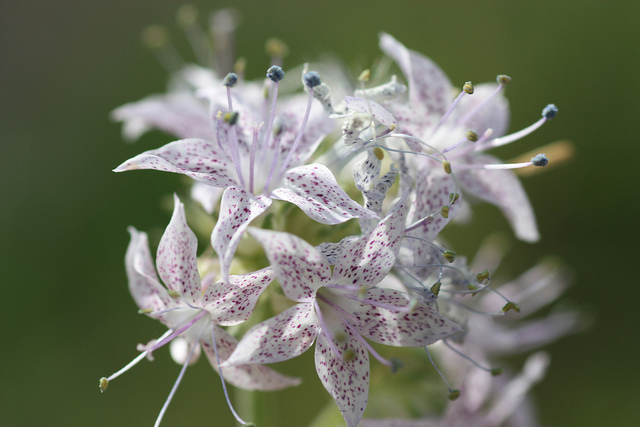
Pagosa skyrocket

The Pagosa skyrocket (Ipomopsis polyantha) is a rare biennial plant, which only grows on shale outcrops in and around Pagosa Springs in Archuleta County, Colorado. Approximately 78 percent of its suitable habitat is located on private lands, which are primed for residential, commercial and agricultural development.

Such development is a serious threat to the imperiled species because plants, along with the seeds in the soil that would produce next year’s plants, are destroyed in the development process. Pagosa skyrocket is also threatened by livestock trampling. Population numbers fluctuate year to year based on environmental conditions. One poor year of unfavorable weather, minimal moisture or natural disturbance can be detrimental to the species. The Pagosa skyrocket is listed as endangered.